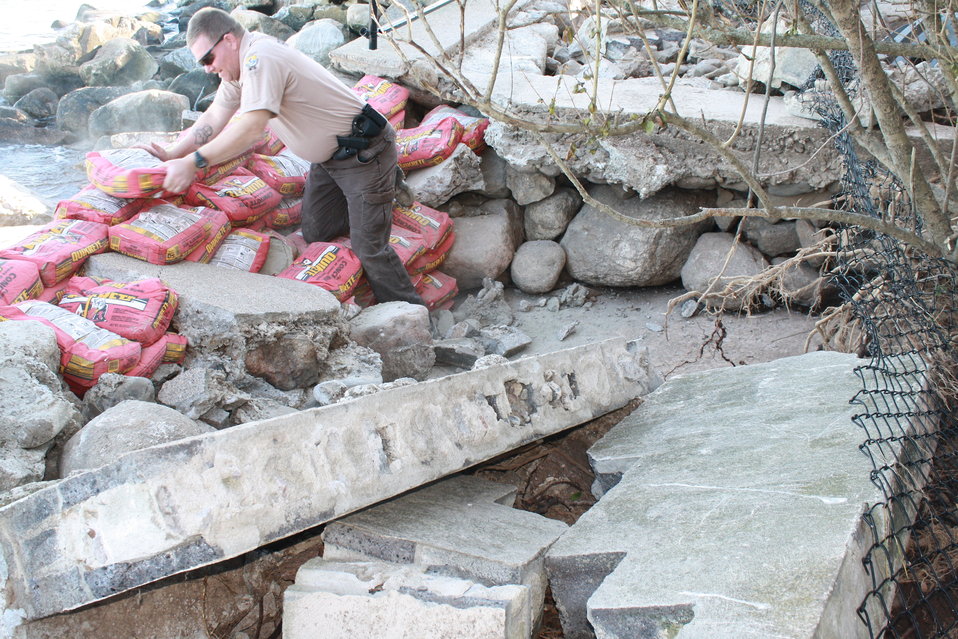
Beginning repairs at Stewart B. McKinney National Wildlife Refuge (CT)

Refuge Law Enforcement Officer Sean Healy works to repair disturbed ground and a wall that was damaged after Hurricane Sandy.